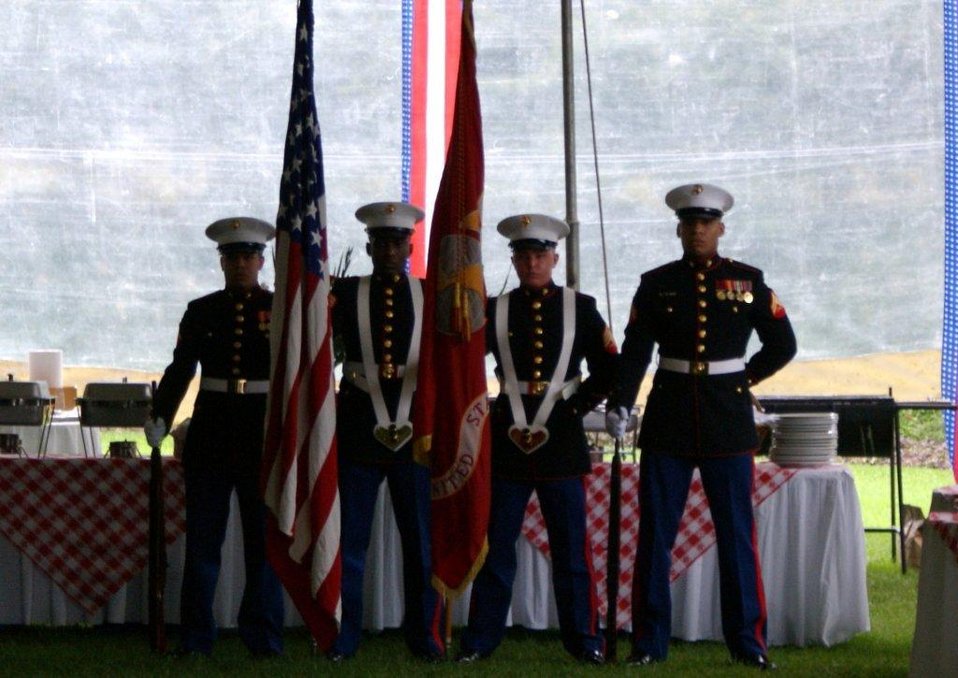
July 4th Celebration at U.S. Embassy in Guatemala

The U.S. Marine Corps color guard prepares to march down the aisle at the U.S. Independence Day celebration at the Ambassador’s Residence in Guatemala City, Guatemala, on July 2, 2010.